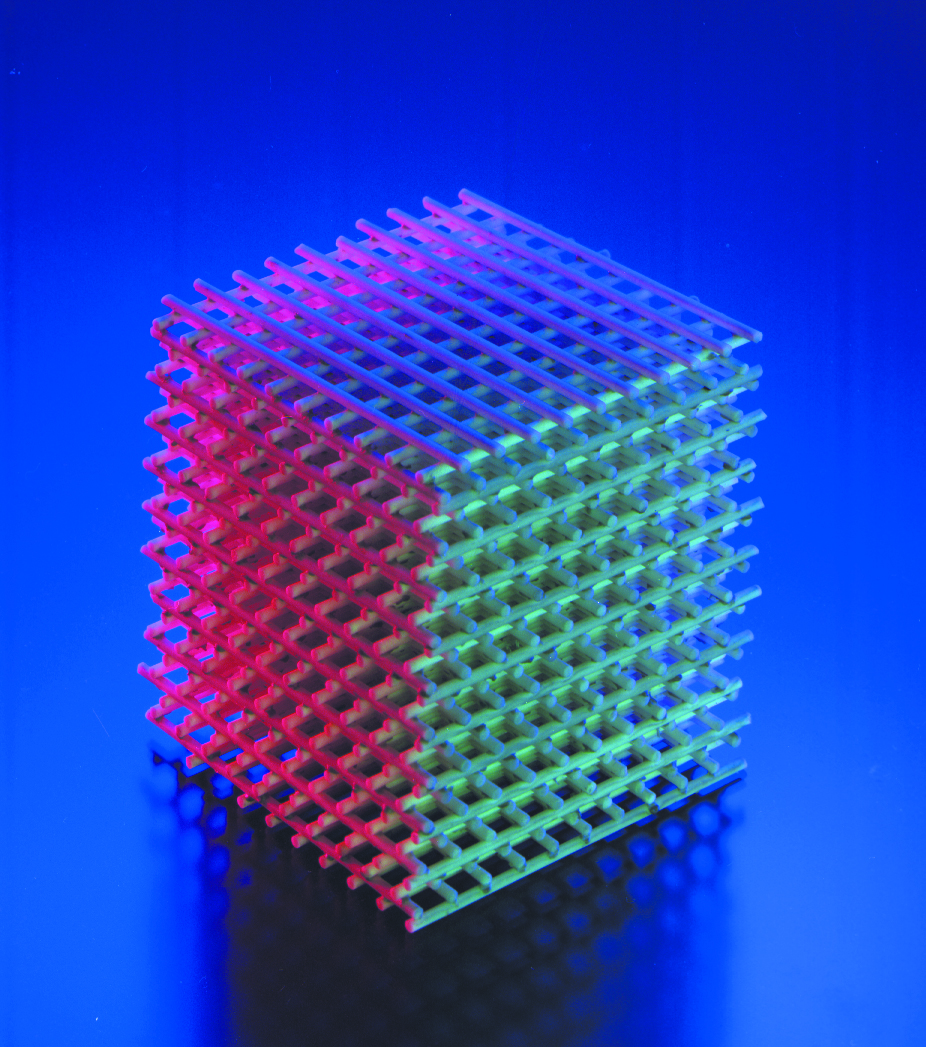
Photonic band-gap crystal.

Ames Laboratory developed the first model of a photonic band-gap crystal. Such crystals have the ability to control and filter light similar to the way semiconductor control electricity.